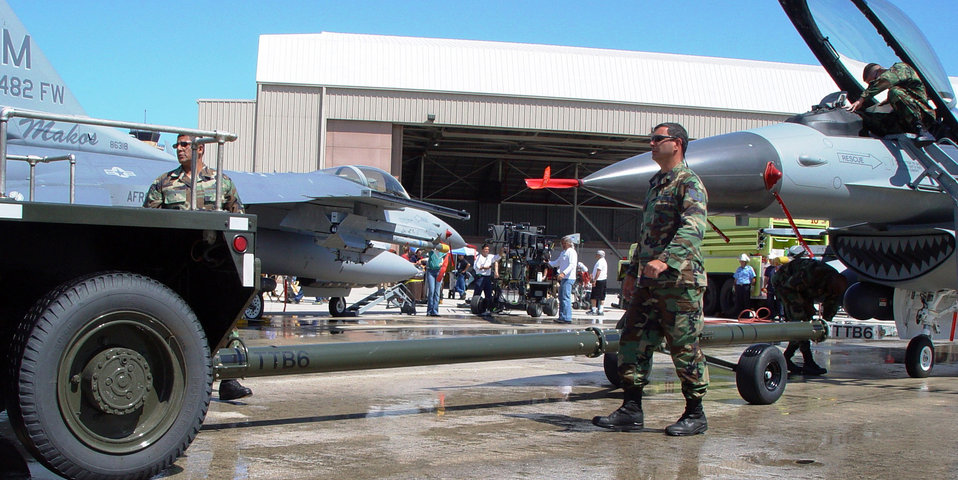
Air Force Reserve goes Hollywood

Airmen from the 482nd Fighter Wing move F-16 Fighting Falcons into position for a scene in the Warner Brothers television pilot